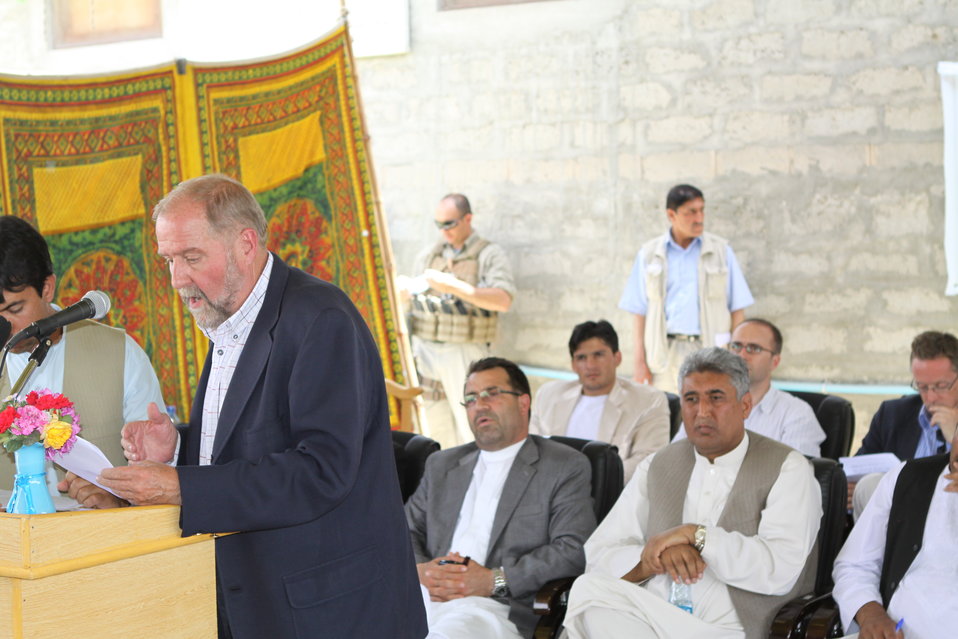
Bolan Poultry Farm